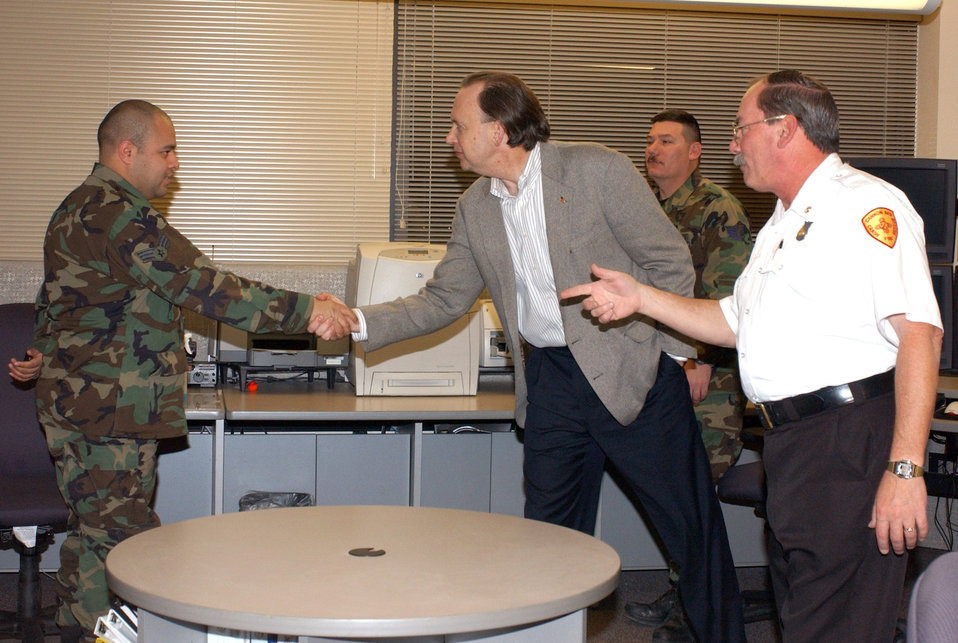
Leadership visit

CANNON AIR FORCE BASE, N.M. (AFPN) -- Senior Airman Alberto Flores and Richard Givney, brief Assistant Secretary of the Air Force William C.